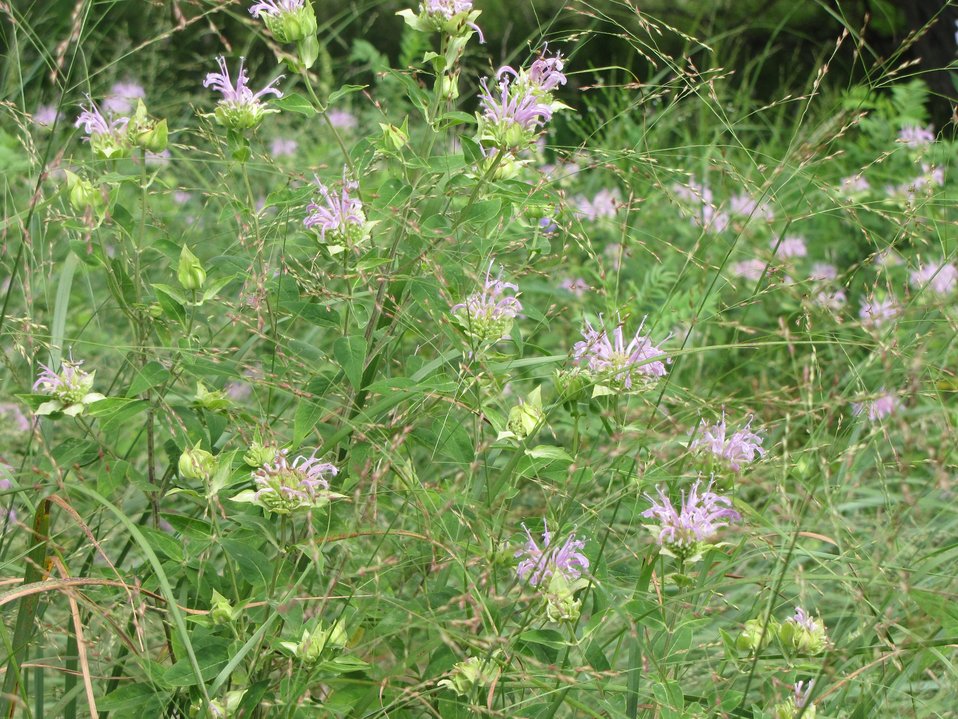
Monarda Fistulosa

A sand prairie on private lands located along the Loup River sports a variety of prairie plants, including this Bee Balm intermixed with Switchgrass. A summer bloomer, this plant hosts a variety of insects, an important food in the Great Plains region.

Credit: Laurel Badura / USFWS

Photo Contest Entry #185